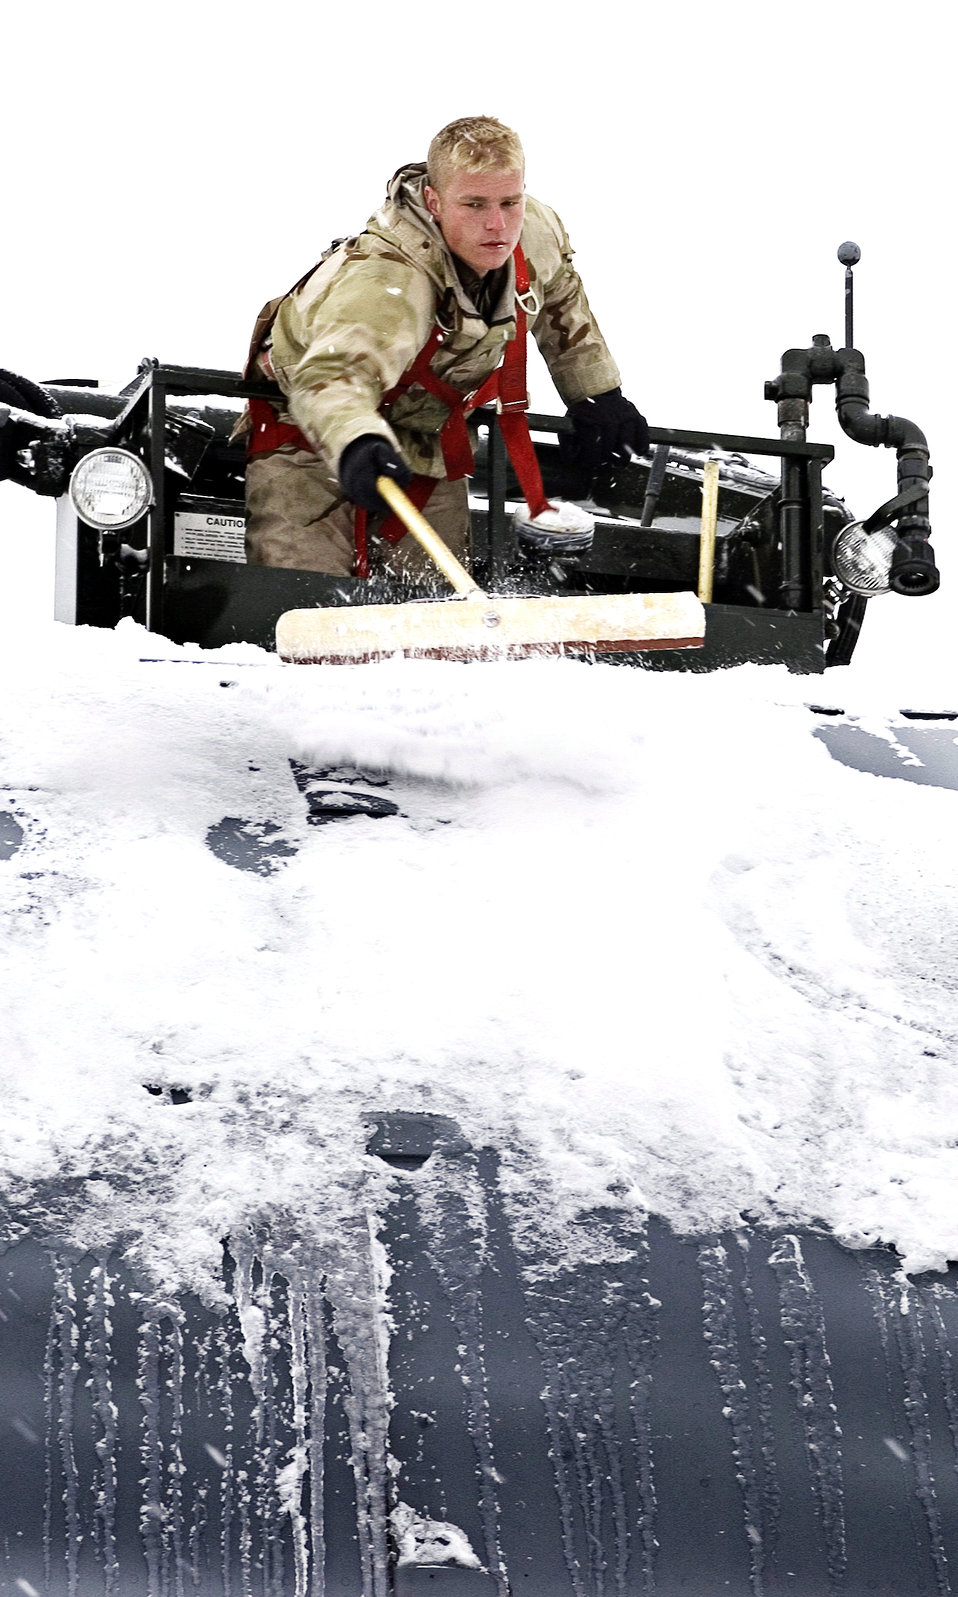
Snowbody knows

MANAS AIR BASE, Kyrgyzstan -- Airman 1st Class Michael Long sweeps snow from a KC-135 Stratotanker. The base here received 14 inches of snow in 36 hours. He is assigned to the 376th Expeditionary Aircraft Maintenance Squadron.